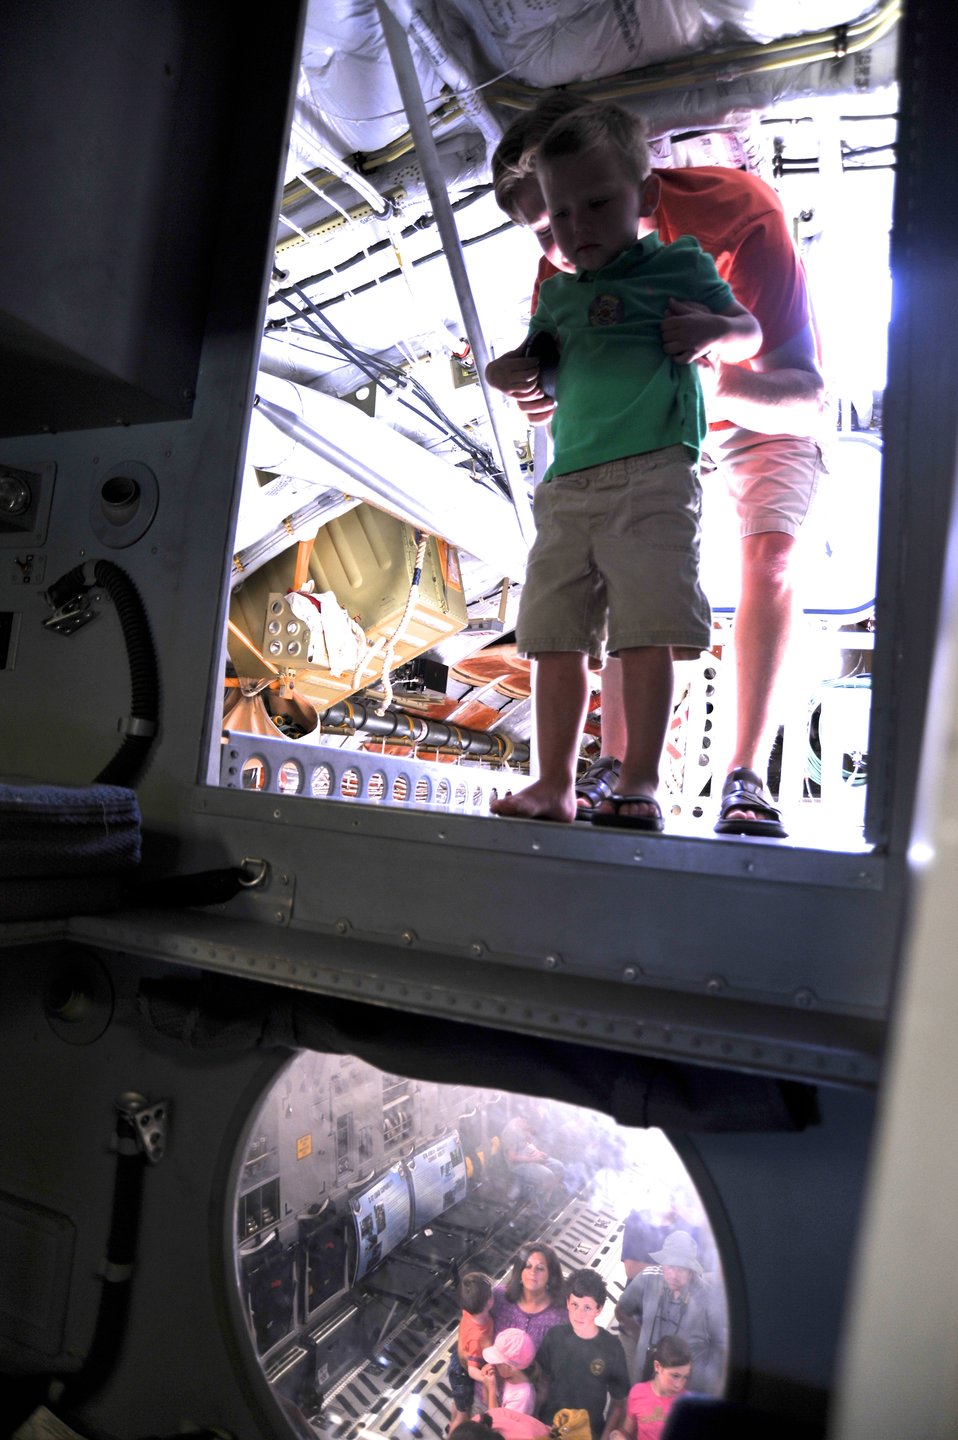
Small steps for a small pilot

A father guides his son back into the flight deck of a C-17 Globemaster, near Chantilly, Va., June 16, 2012. Become a Pilot Day is an annual event held at the National Air and Space Museum's Udvar-Hazy Center.